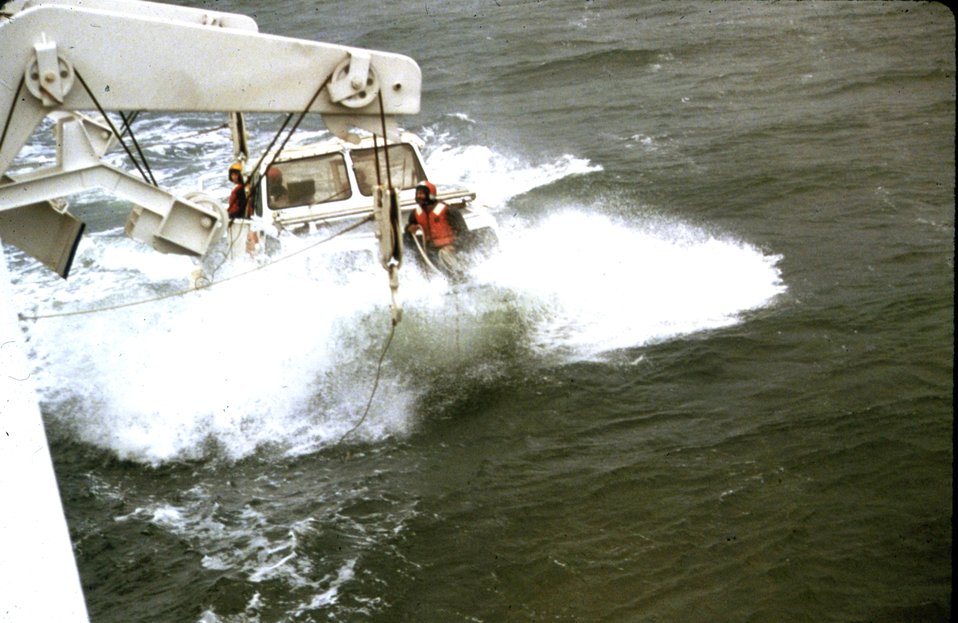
PEIRCE hydrographic launch approaching ship for pickup. November front had just passed whipping up wind and sea. Mike Briscoe on the bow hook. Strength and agility are the prerequisites. Lt. (j.g.) Victoria Barnum is OIC, 'K.P.' Keene the coxswain. Ship making lee during approach; boat out of water within two minutes of photo